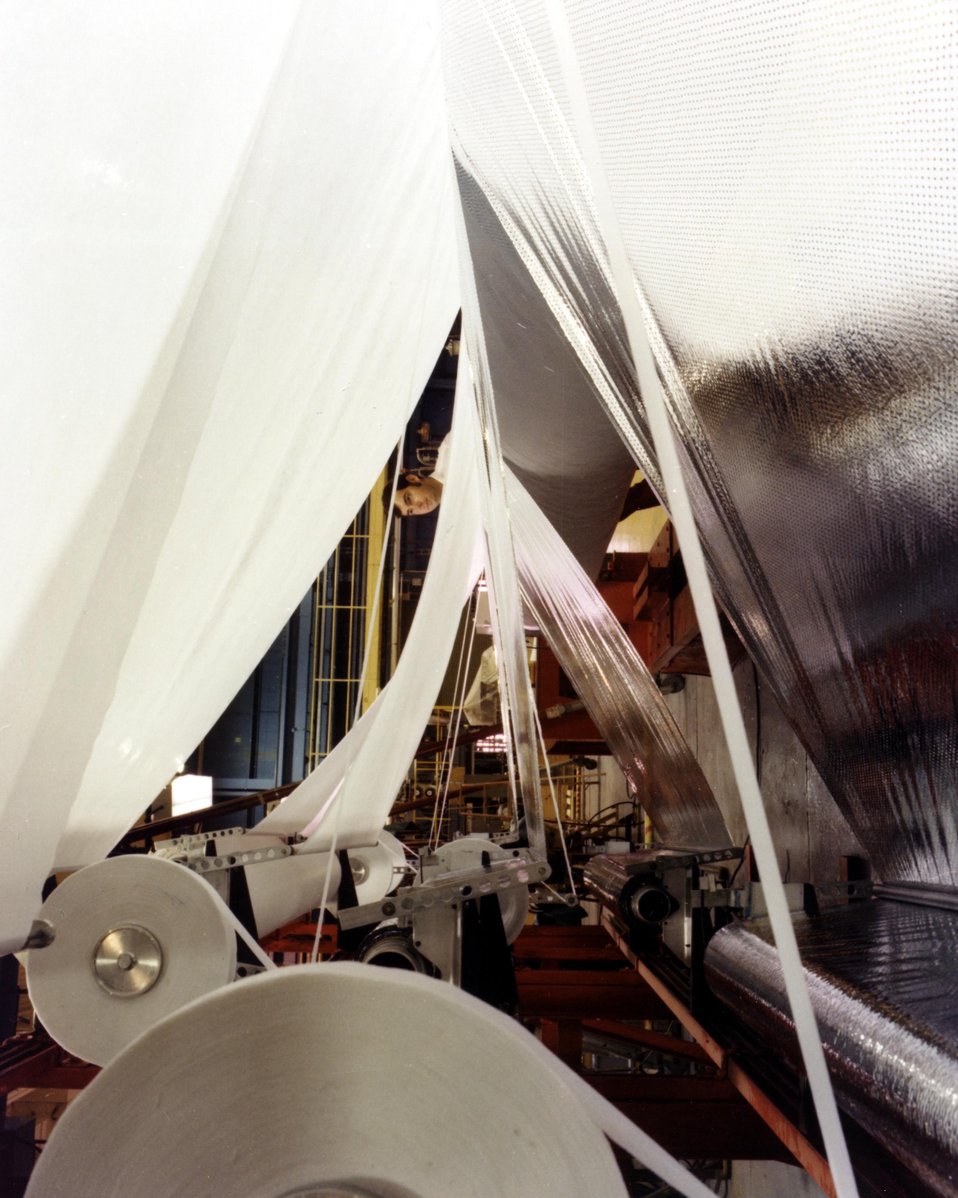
CBA IS A PROTON-PROTON COLLIDING BEAM ACCELERATOR WHICH IS BEING BUILT TO STUDY THE BASIC STRUCTURE OF ENERGY AND MATTER. THE FACILITY ITSELF IS AN UNDERGROUND CIRCULAR TUNNEL 3.8 KILOMETERS IN CIRCUMFERENCE. TWO RINGS OF SUPER-CONDUCTING MAGNETS WILL BE INSIDE THE TUNNEL. INSULATION, SHOWN, IS USED IN WRAPPING MAGNET MATERIALS TO INSULATE THE DIFFERENT LAYERS OF THE SUPERCONDUCTING MAGNET. PROTON BEAMS WILL BE INJECTED INTO THE TUNNEL AND ACCELERATED TO ENERGIES UP TO 400 GEV. AT SIX PLACES ALONG THE TUNNEL, THE BEAMS WILL COLLIDE. EXPERIMENTAL HALLS, WHICH ENCLOSE THESE 6 INTERSECTIONS, WILL HOUSE EQUIPMENT FOR STUDYING THE RESULTS OF THE COLLISIONS.